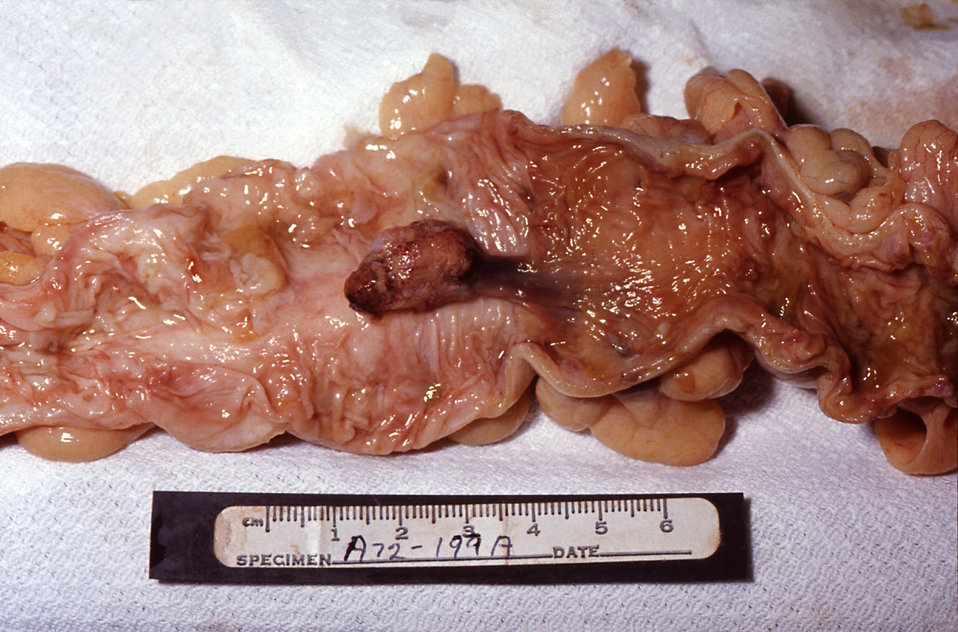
Gross pathology of polyp, colon